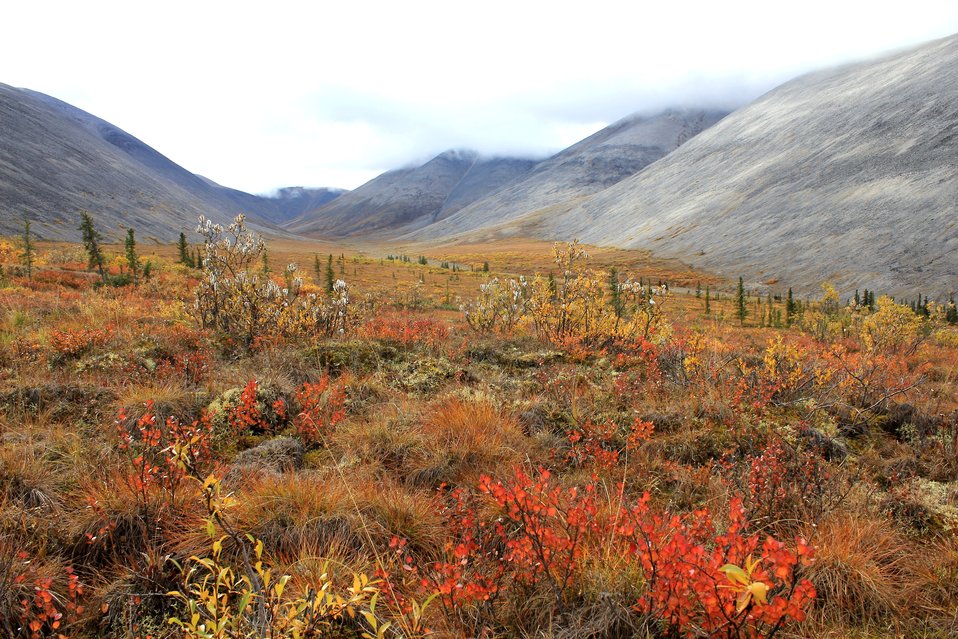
Looking into Windy Pass Valley along the Dempster Highway. This valley has been unglaciated for the last 100,000 years and pollen analysis indicates that the indigenous composition of plants has remained constant during this period. Hence, this flora is what early human emigrants encountered when migrating to North America.